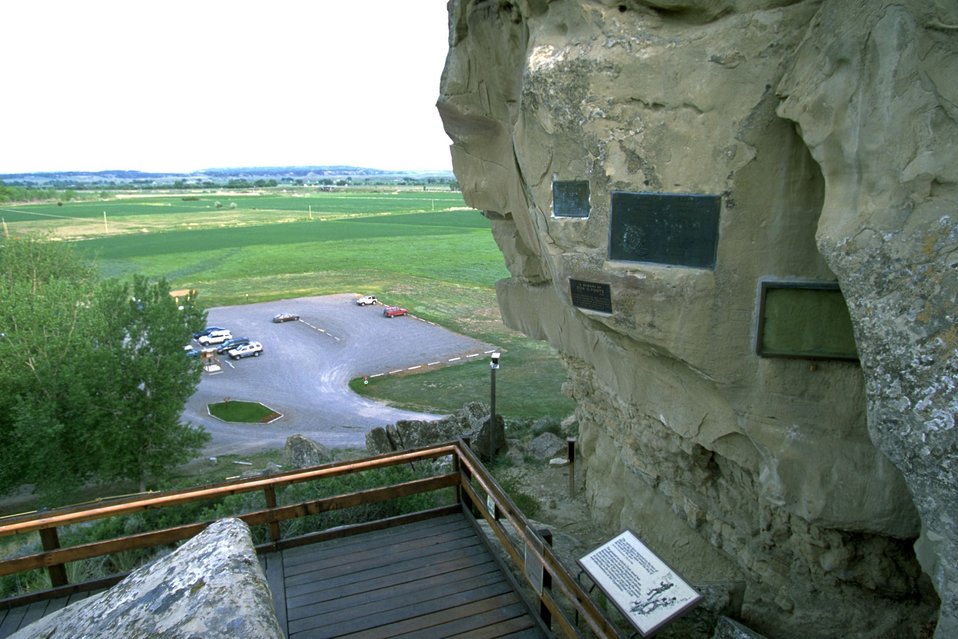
View from the upper viewing platform of the Signature area and Pompeys Pillar parking lot